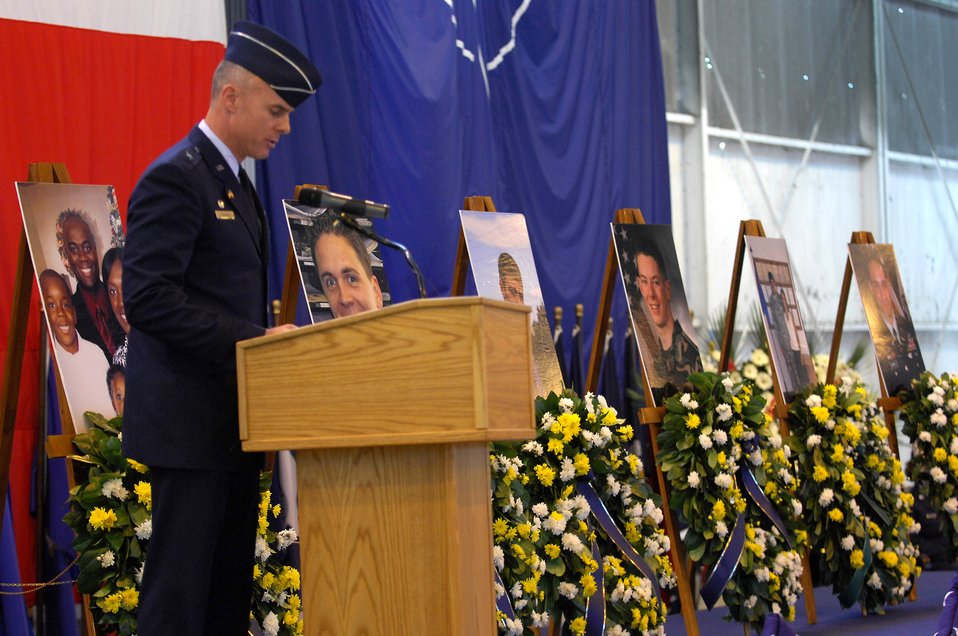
Fallen Airmen, Soldiers honored at Aviano

Brig. Gen. Craig A. Franklin speaks at Aviano Air Base, Italy, during a Nov. 15 memorial ceremony for the six servicemembers who lost their lives Nov. 8 when an Army UH-60 Black Hawk helicopter attached to the 1st Battalion, 214th Aviation Regiment crashed Nov. 8, 22 miles southwest of Aviano, Italy. General Franklin is the 31st Fighter Wing commander.